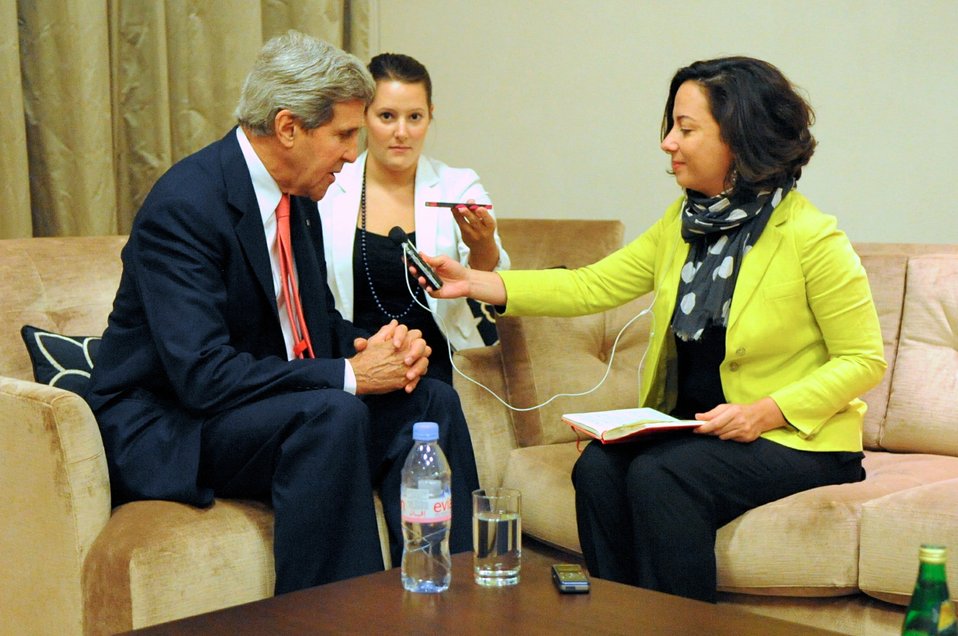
Secretary Kerry Conducts Interview With BBC's Ghattas

U.S. Secretary of State John Kerry conducts an interview with the BBC's Kim Ghattas as he wraps up an 11-day tour of North Africa, Europe, the Middle East, and Persian Gulf with a stop in Abu Dhabi, United Arab Emirates, on November 11, 2013.